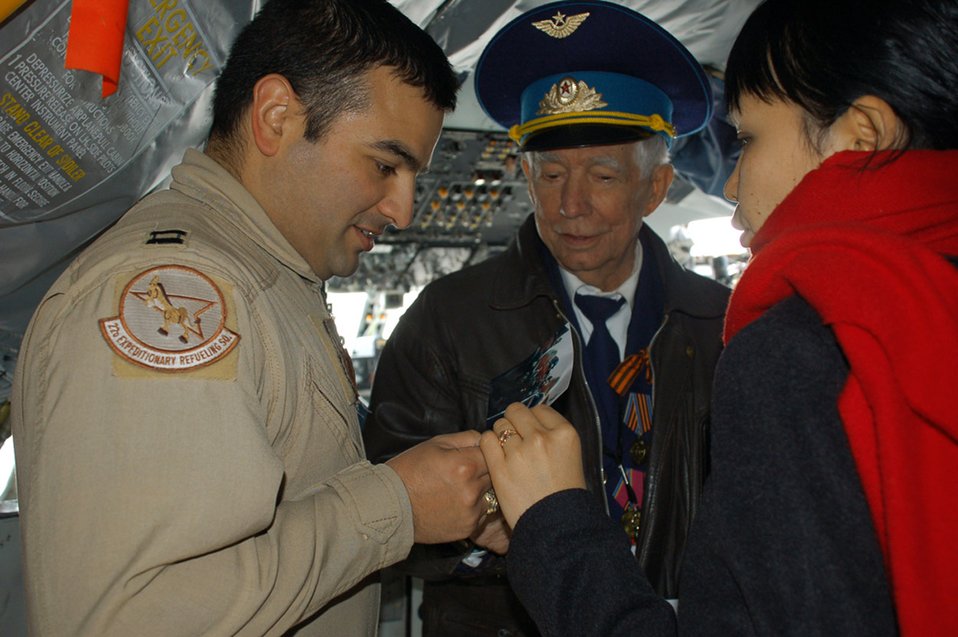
Airmen, 'Great Patriots' celebrate Veterans Day

Capt. Jon Flores (left) looks at an old photo of retired Soviet Union Army Col. Vasili Steiniko from his former military days. Interpreter Jibek Tashtanalieva translates for the pair. Colonel Steiniko was one of a dozen Kyrgyzstan-area World War II veterans honored at Manas Air Base on Veterans Day. Captain Jones is the 22nd Expeditionary Air Refueling Squadron assistant operations officer.